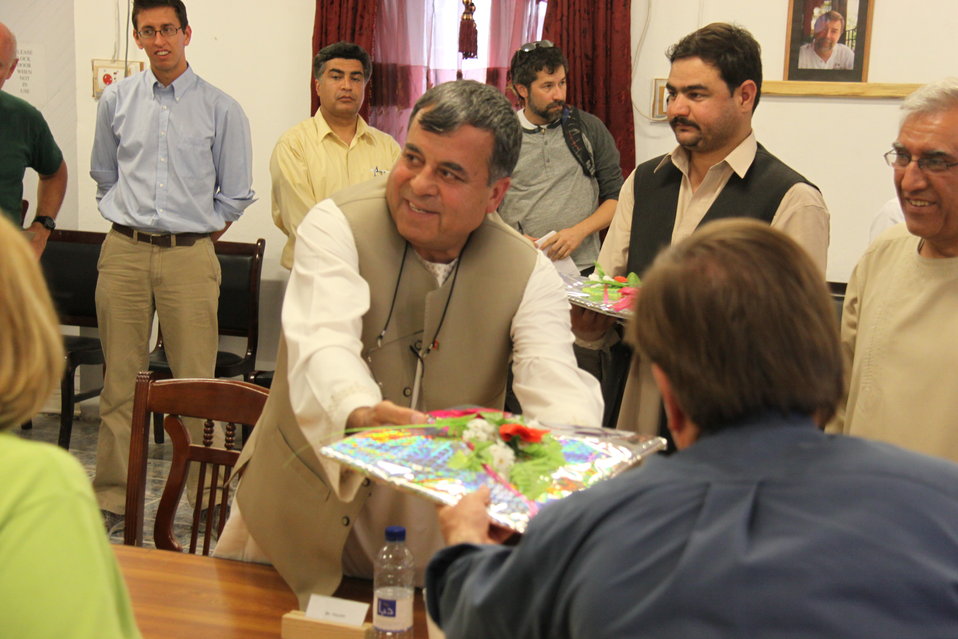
Meeting with Local Leaders in Kandahar